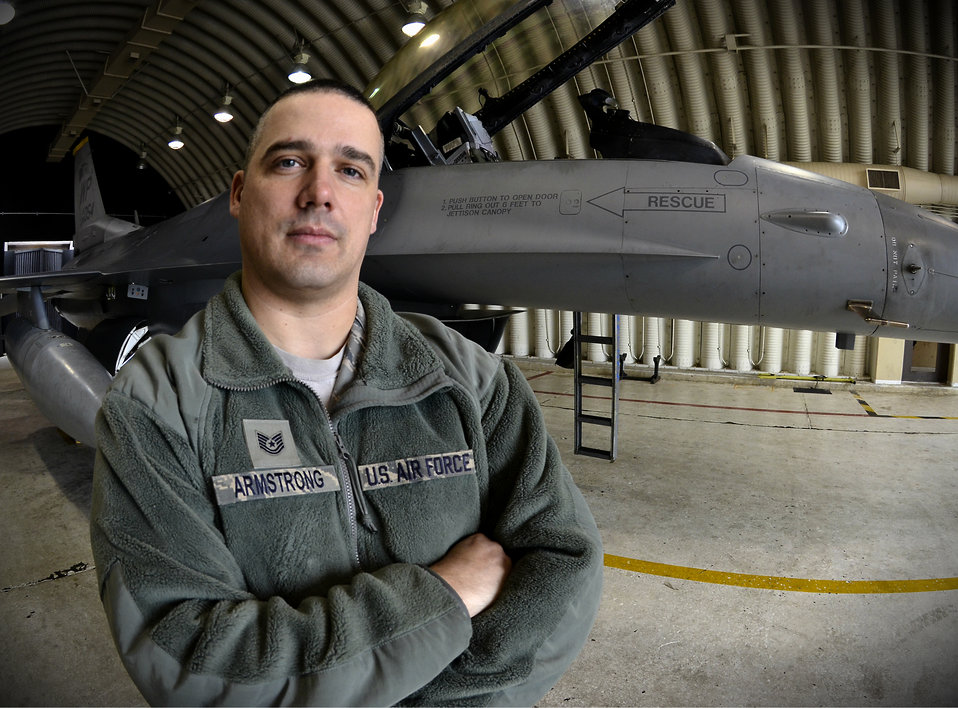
Quality Airman

Tech. Sgt. Barry Armstrong, an 8th Maintenance Group weapons quality assurance inspector, poses for a portrait with an F-16 Fighting Falcon at Kunsan Air Base, South Korea, Jan. 17, 2012. Armstrong shares his more than 14 years of experience working as a weapons loader in the Air Force and what it took to get where he is.